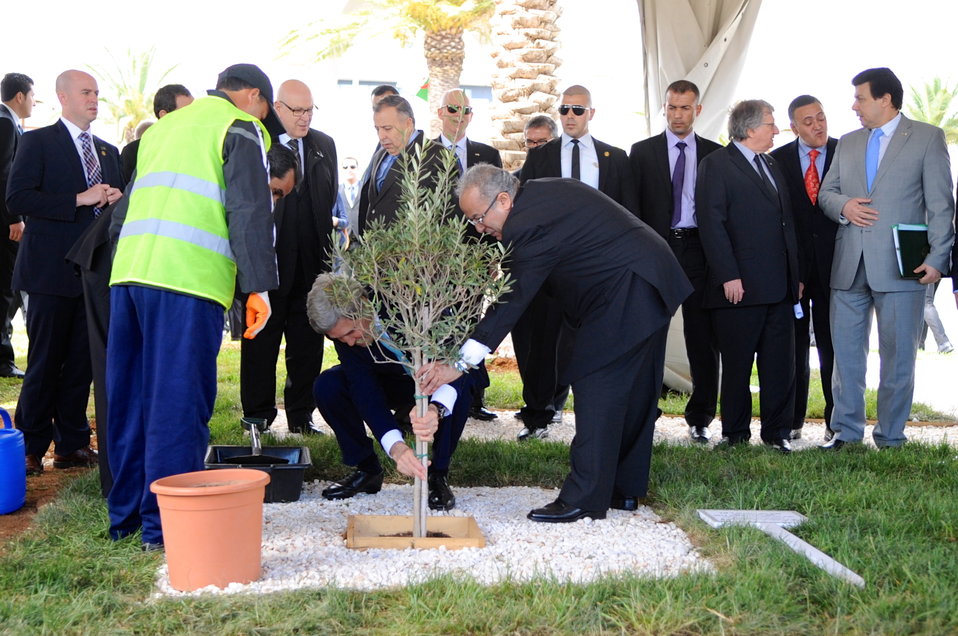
Secretary Kerry and Algerian Foreign Minister Plant Olive Tree Outside Ministry of Foreign Affairs in Algiers

U.S. Secretary of State John Kerry and Algerian Foreign Minister Ramtane Lamamra jointly plant an olive tree outside the Ministry of Foreign Affairs after a Strategic Dialogue between their two countries in Algiers on April 3, 2014.